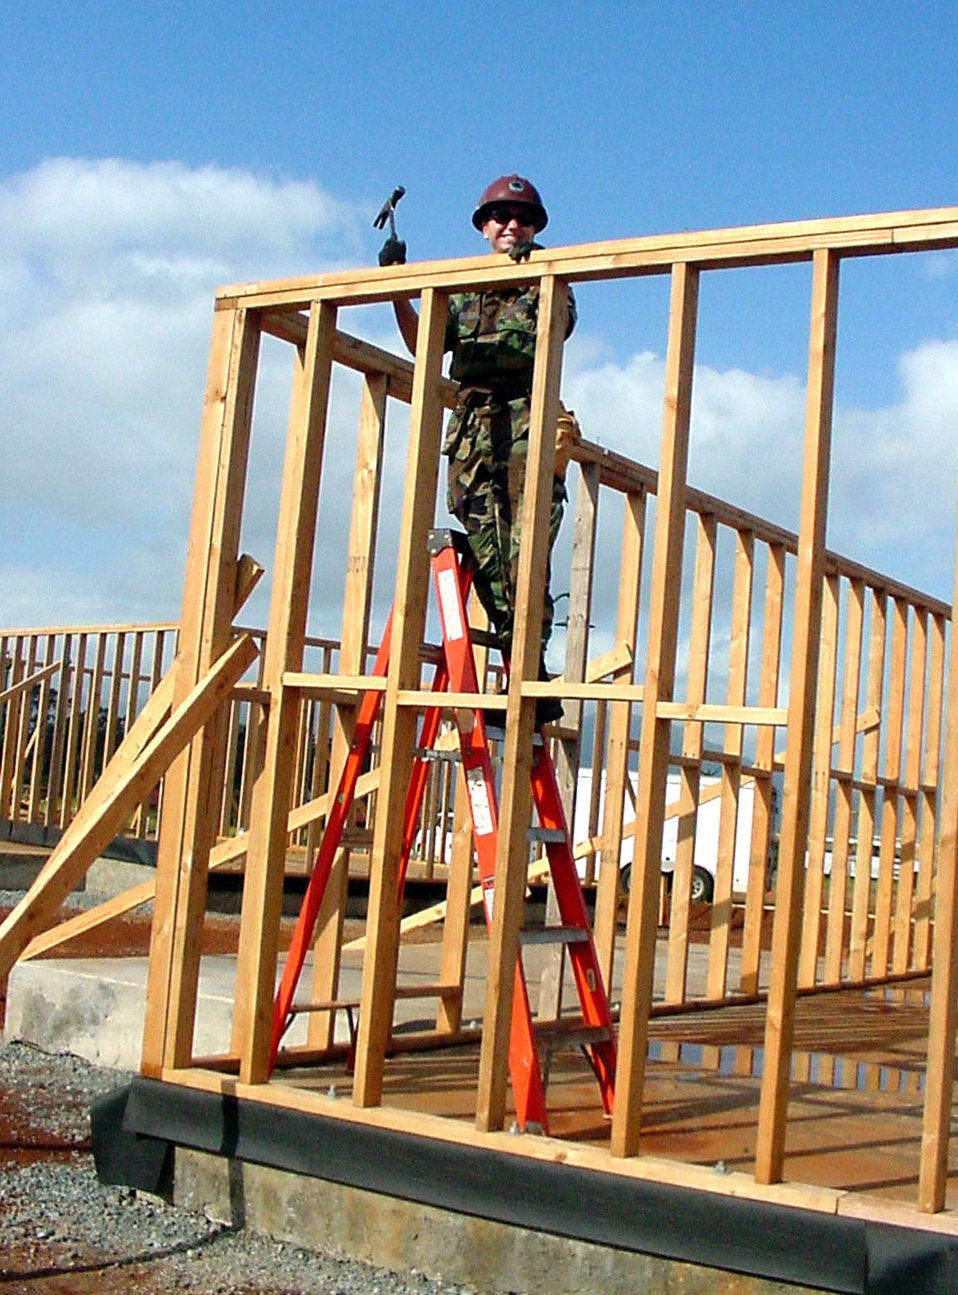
Civil engineers assist in humanitarian mission

Airman 1st Class Danielle Klitzke assists with building exterior walls on an adult daycare center in Oahu, Hawaii. The reservist is assigned to the 440th Airlift Wing based at General Mitchell Air Reserve Station in Milwaukee. Forty-four reservists from the 440th Civil Engineer Squadron deployed on the humanitarian mission to Hawaii. Airman Klitzke is a plumber with the 440th CES.